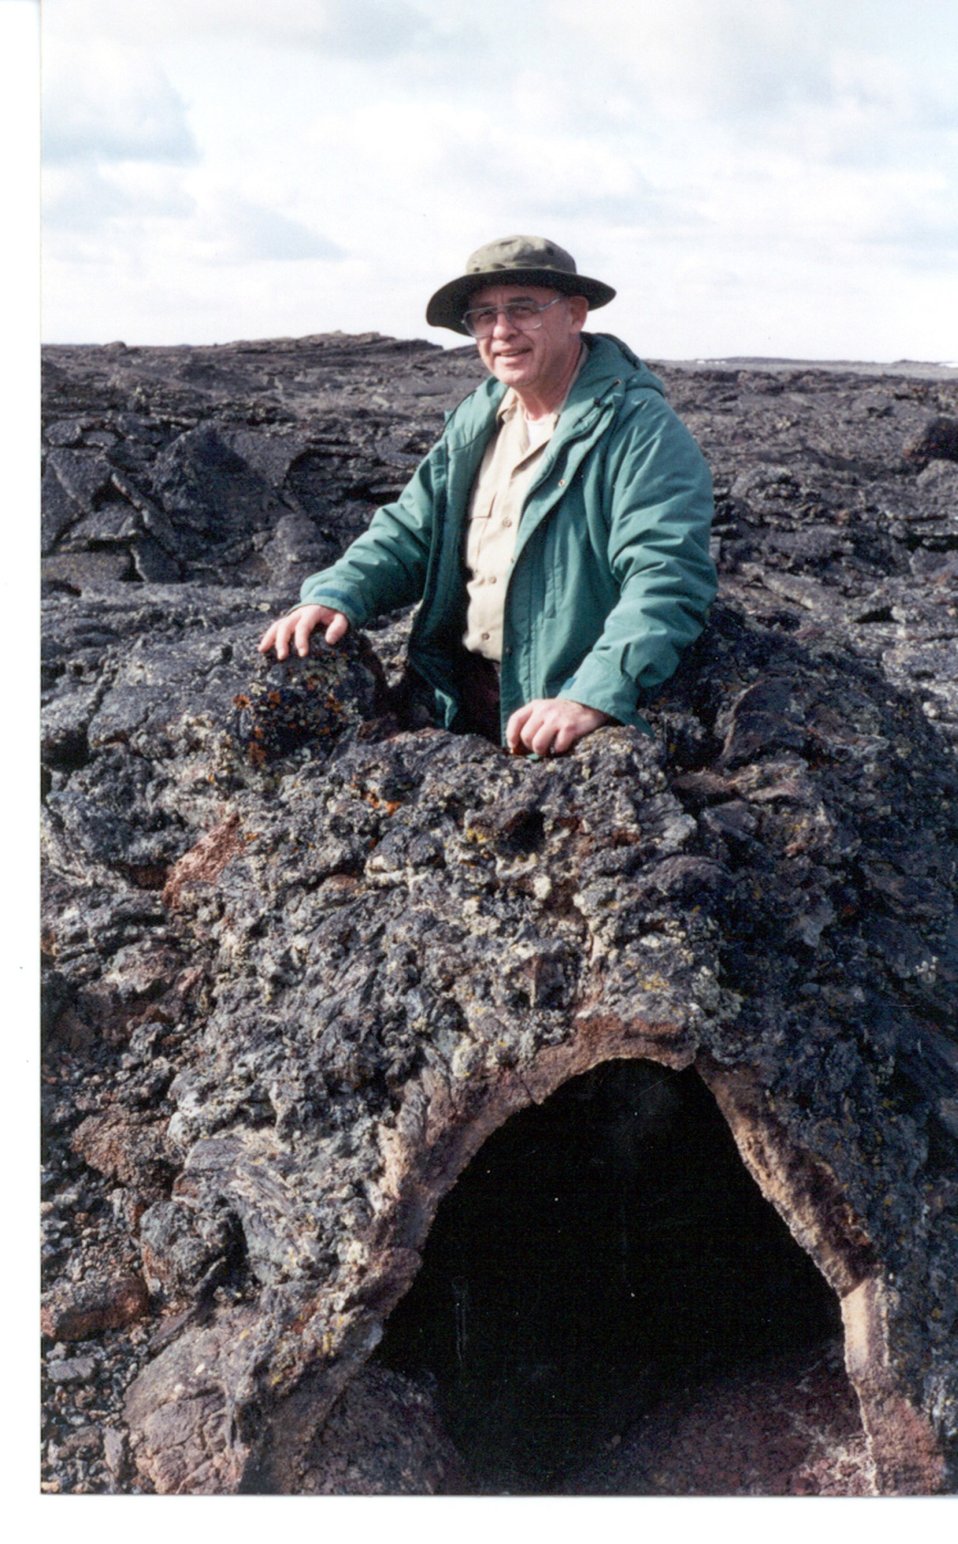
Lava Tube north end of Kings Bowl Craters of the Moon Shoshone Field Office USRD Upper Snake River District